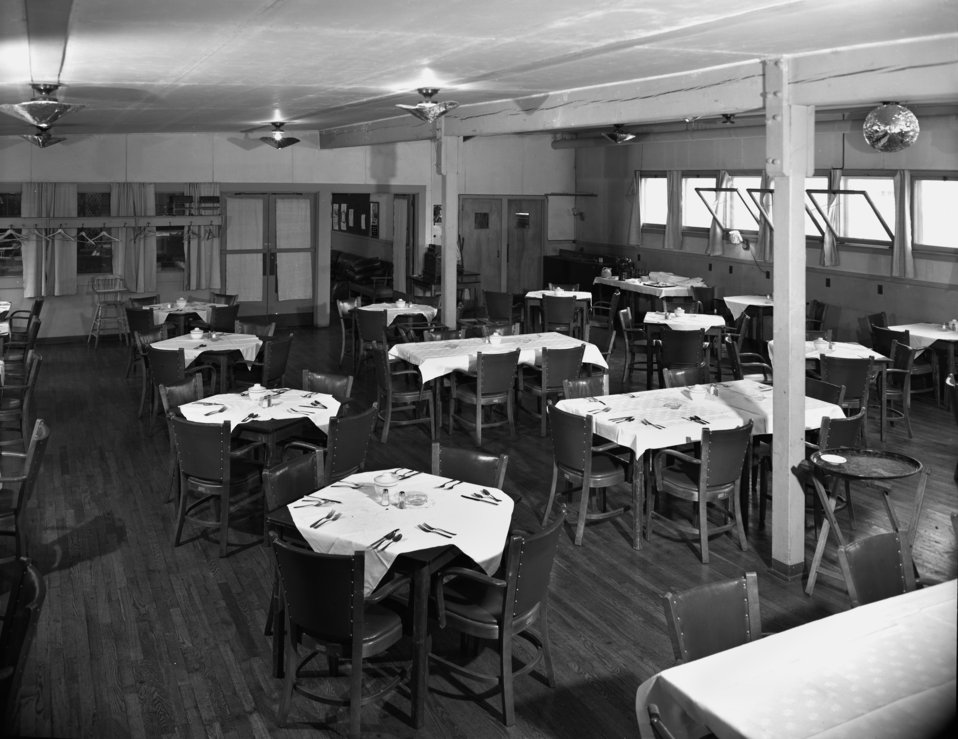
Grove Hall Interior Oak Ridge 1948

DOE photo Ed Westcott 5-24-1948 Oak Ridge Tennessee